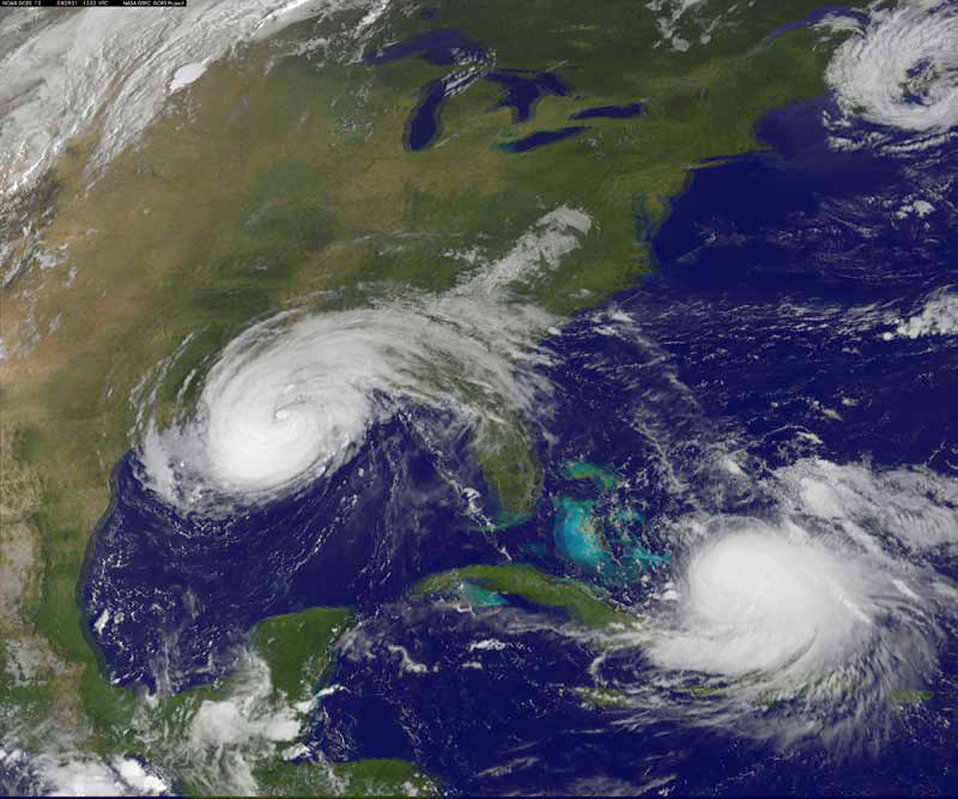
NASA/NOAA's GOES Project Captures Dramatic Satellite Image:This satellite image was captured on Sept. 1 at 13:32 UTC (9:32 a.m. EDT from Geostationary Operational Environmental Satellite (GOES-12). In the image, Hurricane Gustav was just crossing the Louisiana coast while Tropical Storm Hanna was spinning near the Turks and Caicos Islands.